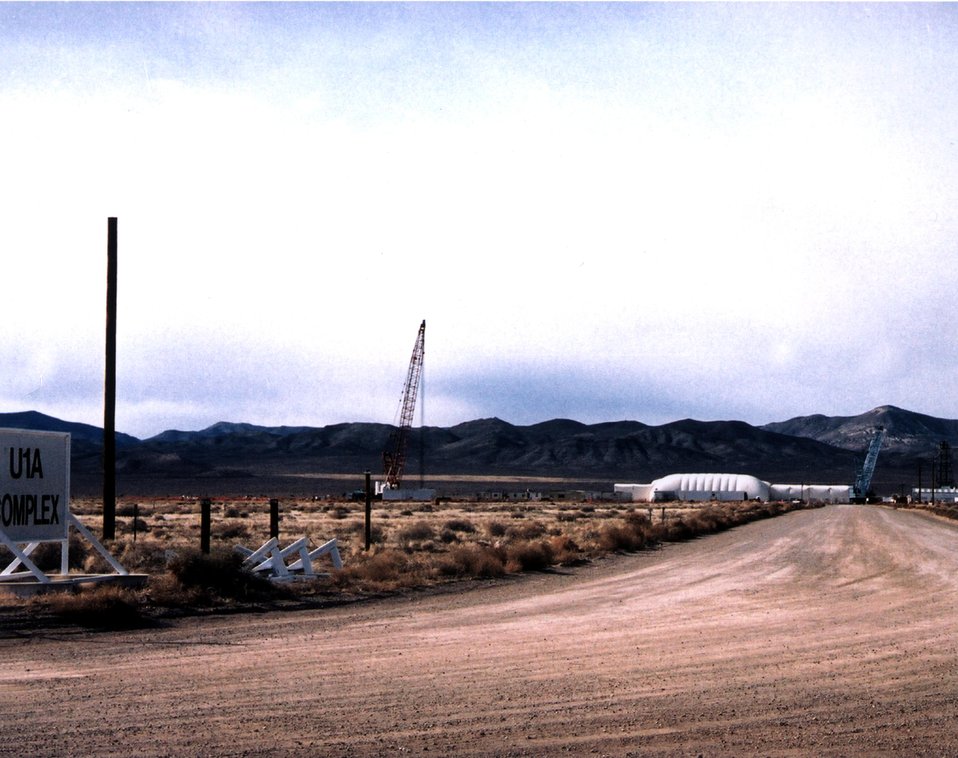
AREA SURROUNDING THE U1A COMPLEX AT THE NEVADA TEST SITE.

THE U1A COMPLEX AT THE NTS CONSISTS OF BUILDINGS AND INSTRUMENTATION TRAILERS FROM WHICH SCIENTISTS MONITOR EXPERIMENTS. EXPLOSIVE TESTS ARE CONDUCTED DEEP UNDER THE NEVADA DESERT BY LAWRENCE LIVERMORE NATIONAL LABORATORY PHYSICISTS AND ENGINEERS. THE SUBCRITICAL EXPERIMENTS ARE AIMED AT PROVIDING IMPORTANT DATA TO EXPERTS WATCHING OVER THE NATION'S NUCLEAR STOCKPILE.